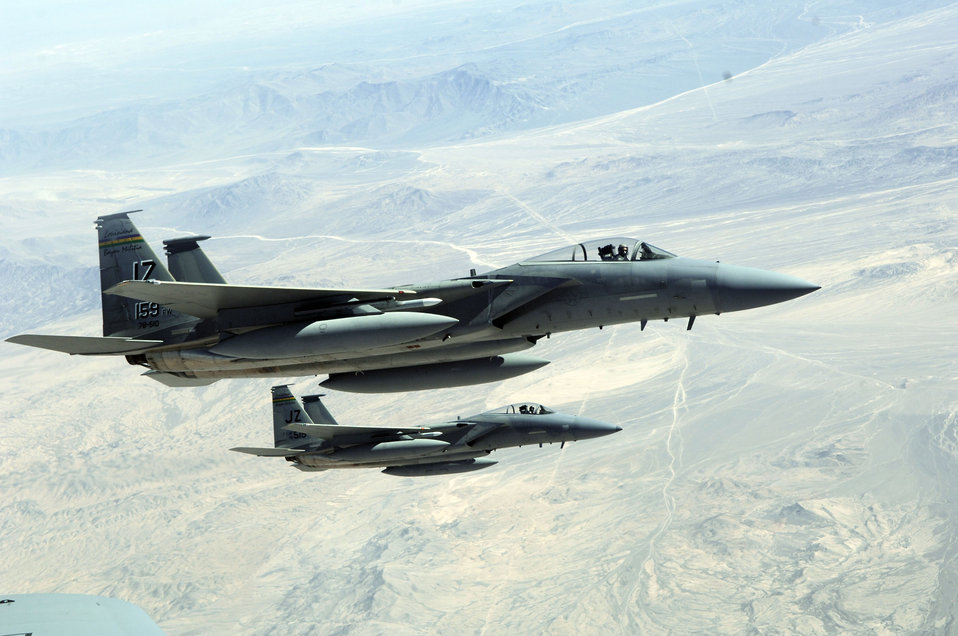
'Airman culture' key to Exercise Salitre success

A pair of F-15 Eagles with the 159th Fighter Wing fly in a wingtip formation off the wing of a KC-135 Stratotanker during a refueling mission Oct. 22, 2009, over Chile. The Chilean air force hosted the United States, Brazil, Argentina and France during Exercise Salitre, a multinational exercise focused on interoperability.